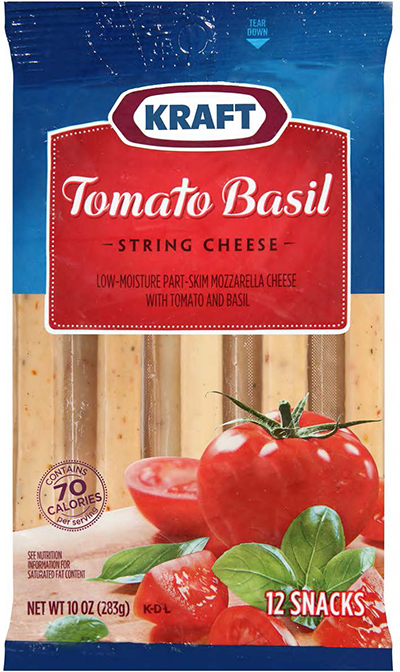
RECALLED – Cheese

October 25, 2013 – Product Recall – Kraft Voluntarily Recalls Some Varieties of Kraft And Polly-O String Cheese And String Cheese Twists Due to Premature Spoilage.